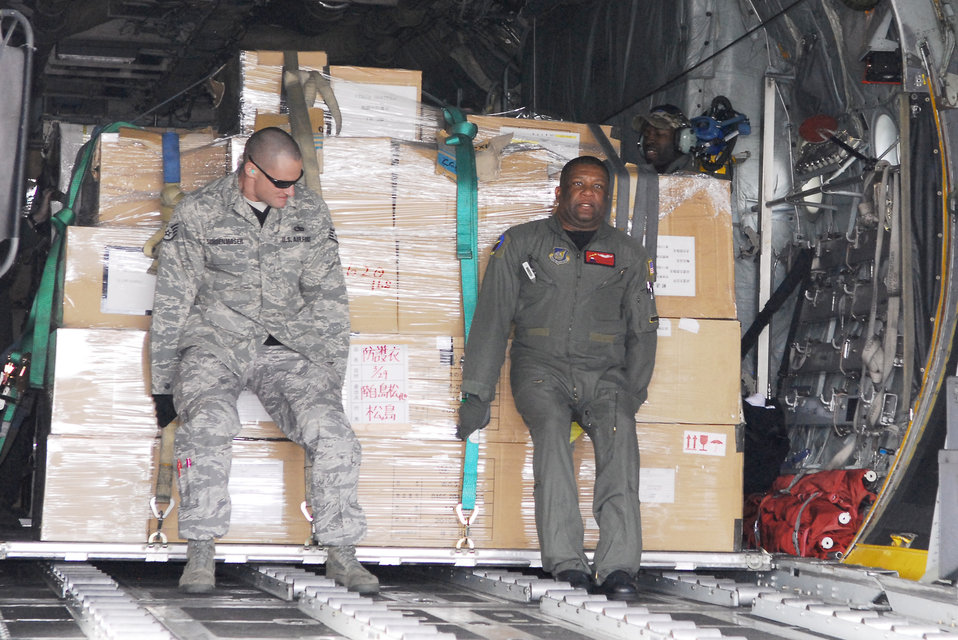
Delivering relief supplies

Staff Sgt. Tyson Schoenmoser (left) and Master Sgt. Anthony Pemberton off-load pallets carrying more than 11,000 pounds of relief supplies March 29, 2011, at Matsushima Air Base, Japan. Schoenmoser is a crew chief assigned to the 374th Aircraft Maintenance Squadron at Yokota Air Base, Japan. Pemberton is a loadmaster assigned to the 36th Airlift Squadron at Yokota Air Base, Japan.